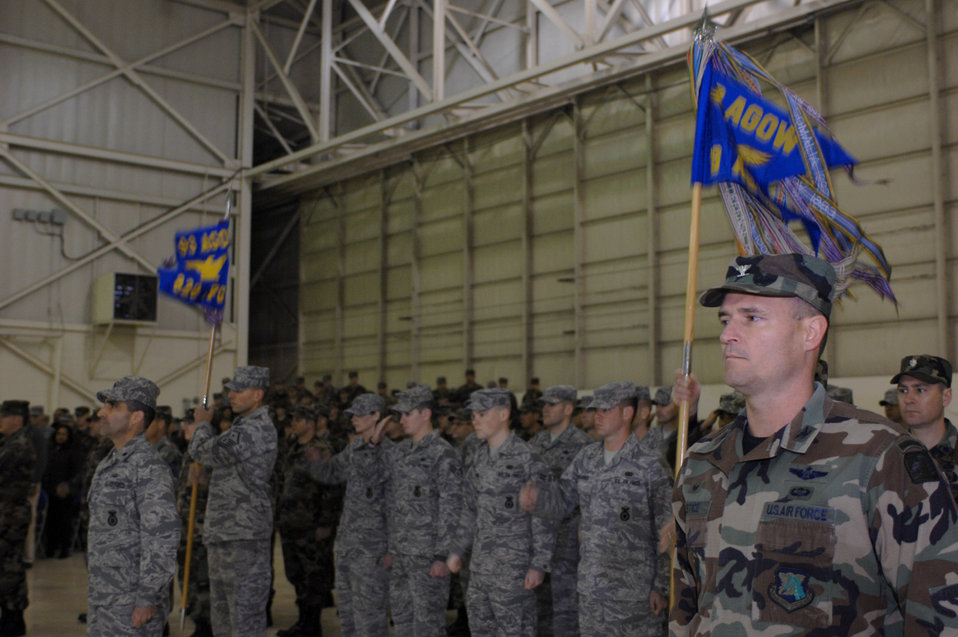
Air Force activates first Air Ground Operations Wing

Airmen representing the units of the 93rd Air Ground Operations Wing stand at attention during the wing's activation ceremony at Moody Air Force Base, Ga., Jan. 25. The Air Force officials activated the 93rd AGOW to bring a new level of support to its specialized battlefield Airmen.